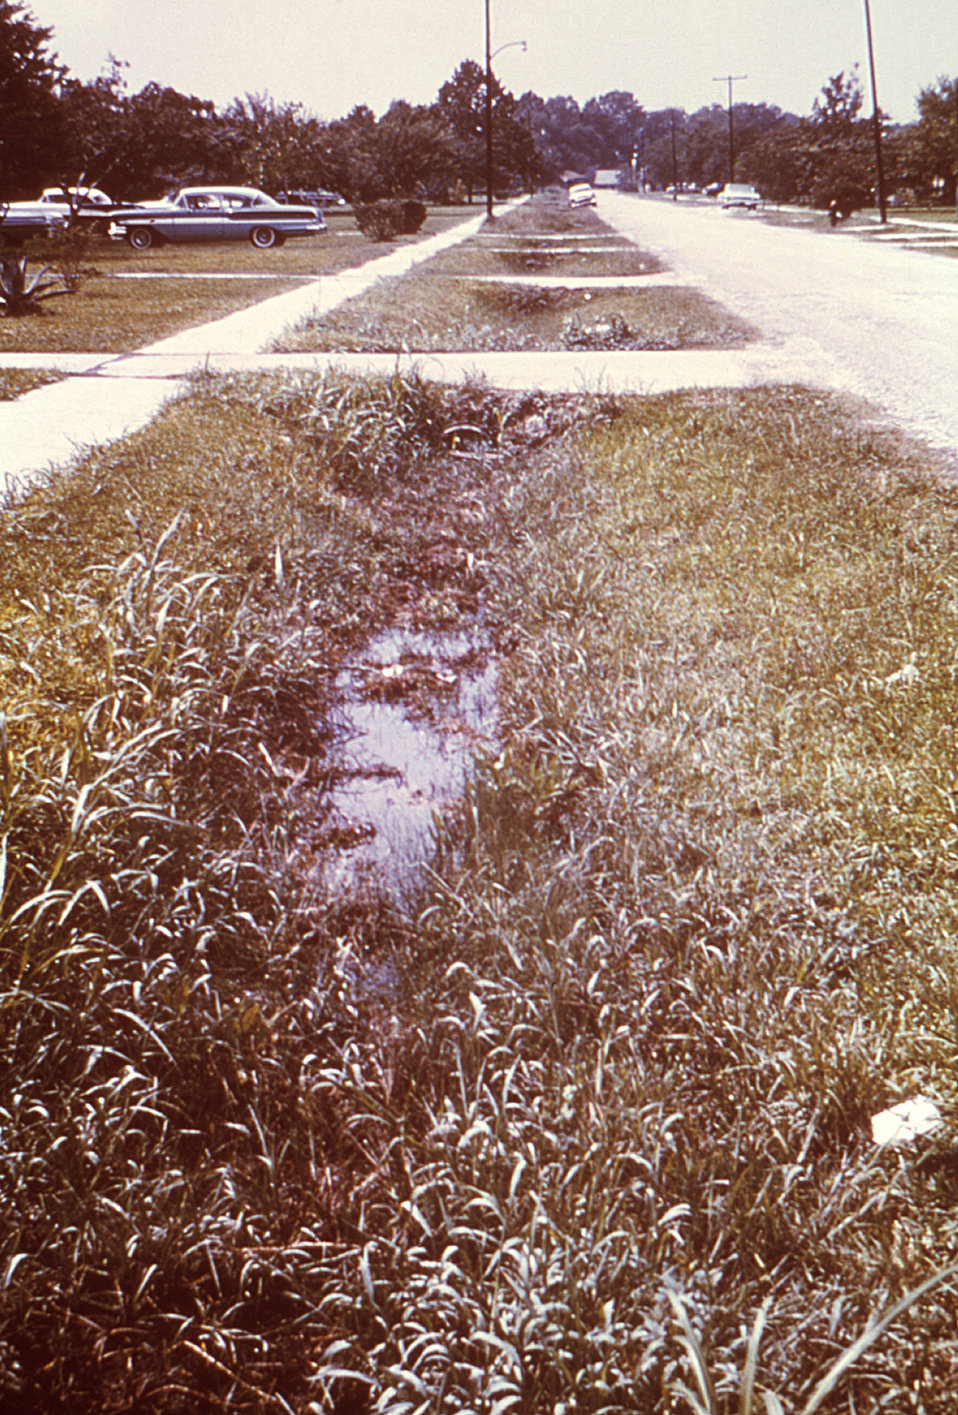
This 1964 photograph depicts a roadside Houston, Texas neighborhood storm water drainage ditch containing stagnant water during a St. Louis Encephalitis (SLE) epidemic that year.